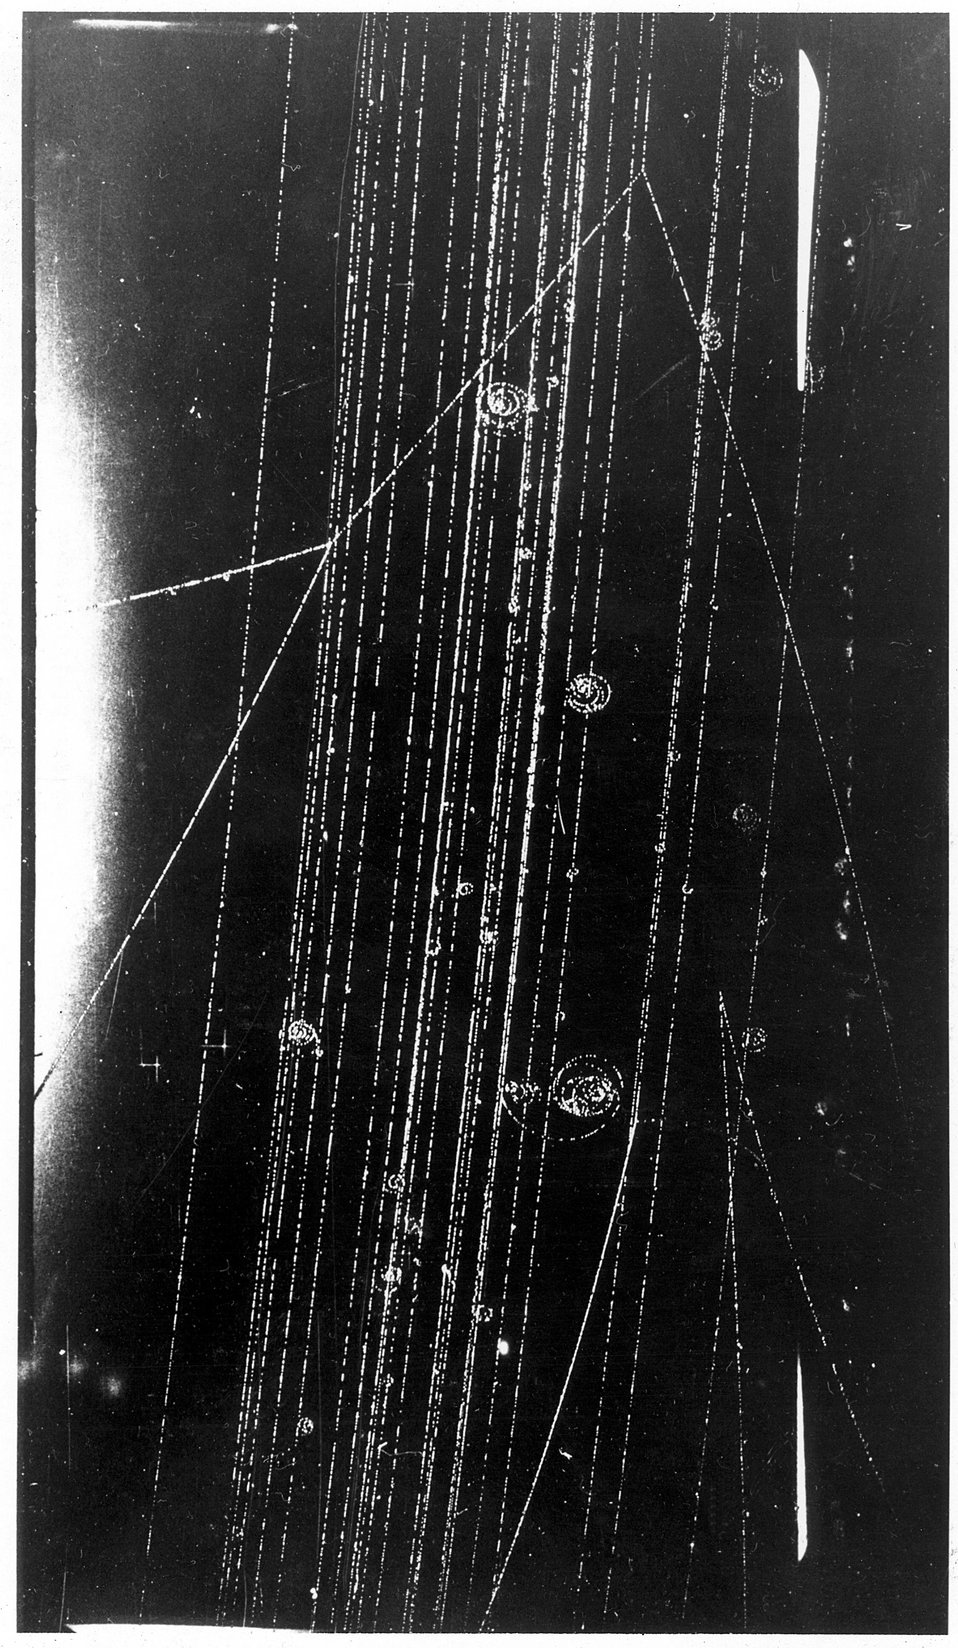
Nuclear interactions in a bubble chamber, as a result of the bombardment of liquid hydrogen by a beam of 2.85 Bev protons from the Cosmotron. c. 1960